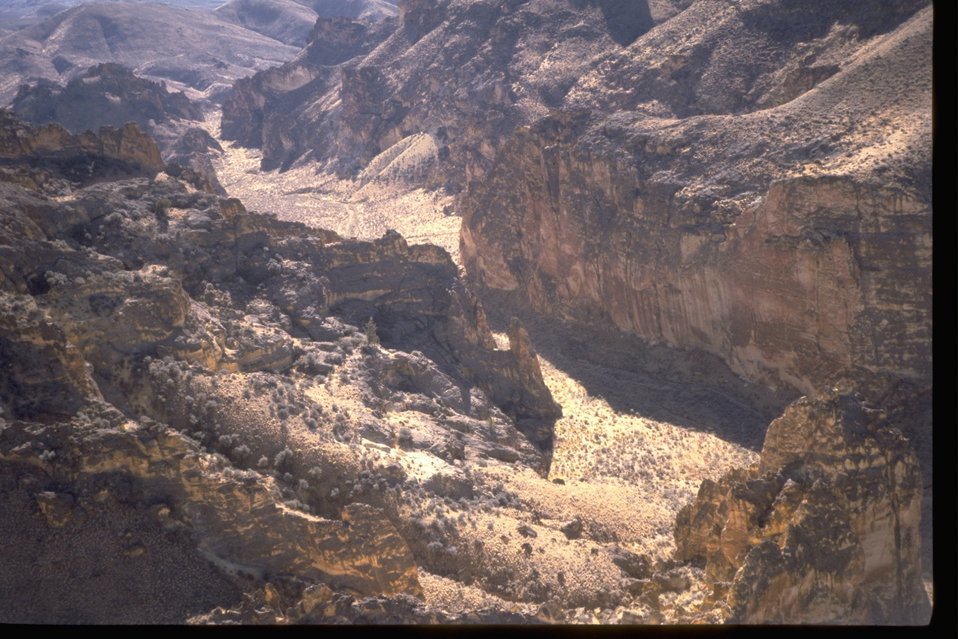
Canyon in the Honeycombs Wilderness Study Area. OR 3-77A.